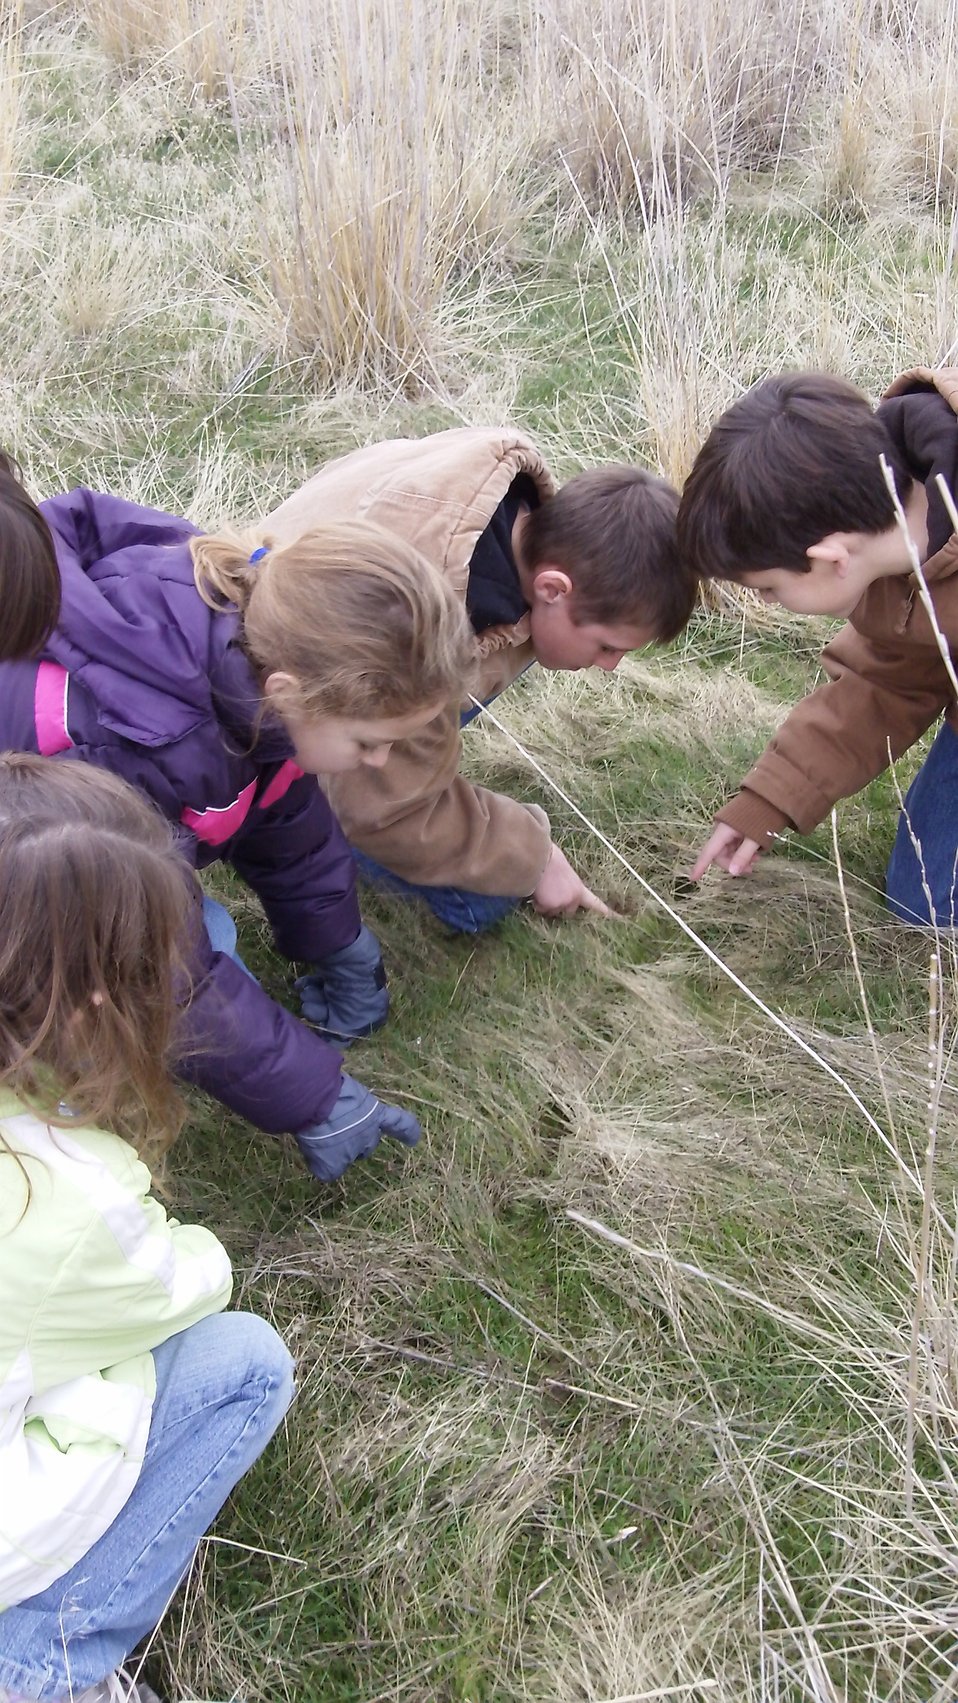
Bear River Migratory Bird Refuge

Animal tracking students identify vole trails at Bear River MBR. As part of our 'Follow That Footprint' animal tracking program, these young explorers found and identified the little tunnels and trails made by a Meadow Vole. They spent the afternoon learning how to make plaster casts of tracks in the wild, identifying tracks and scat, and lots more about the wildlife on the Refuge that we don't 'see' but can find signs of every day.